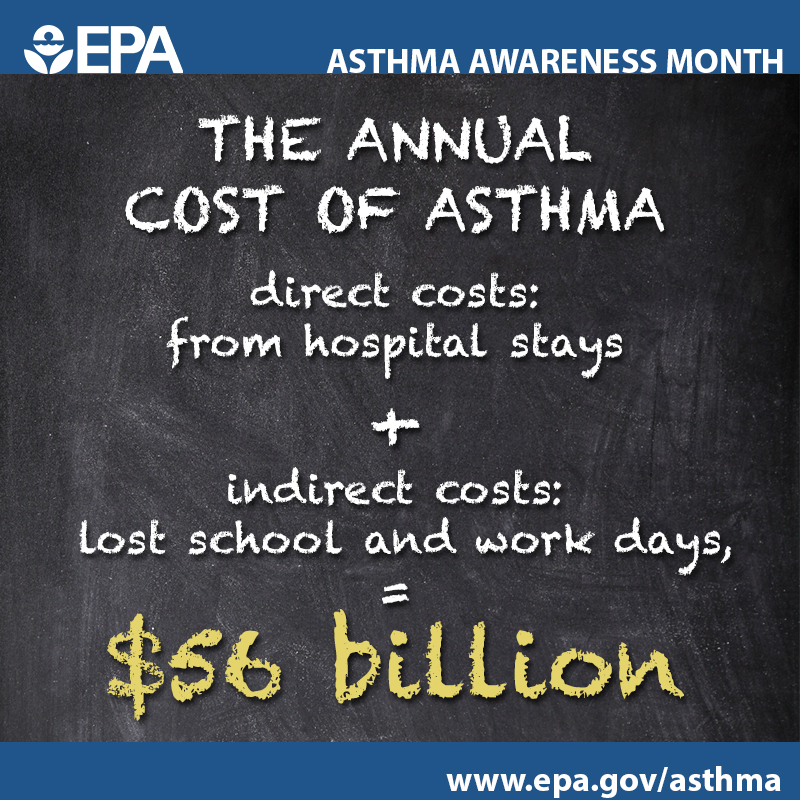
ANNUAL COST OF ASTHMA

Asthma has a hefty price tag. The annual cost of asthma, including hospital stays and lost school and work days, is $56,000,000,000.